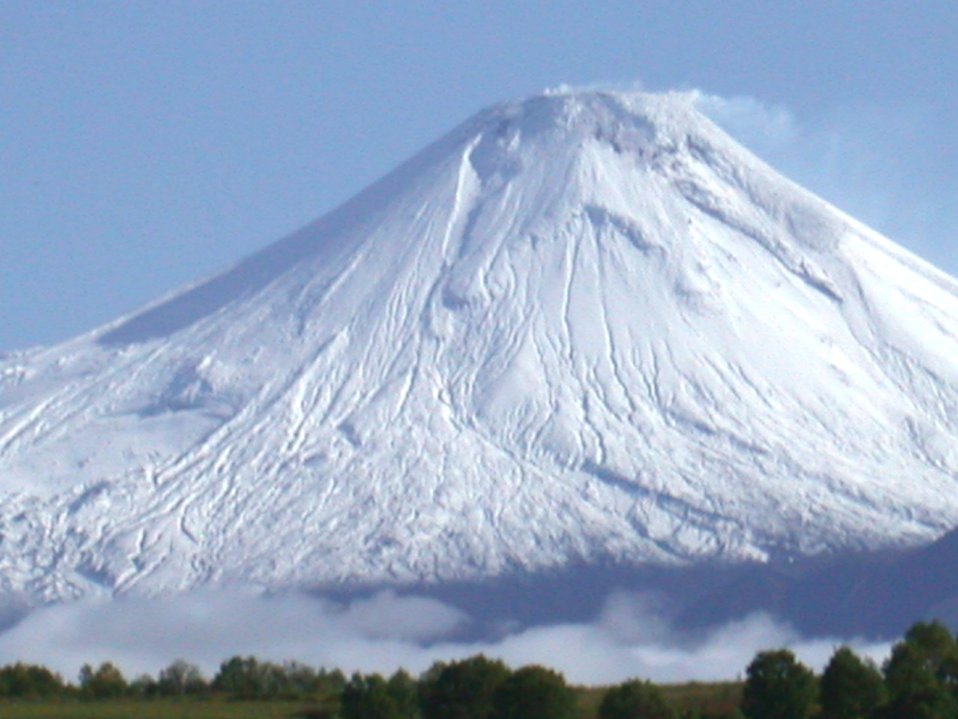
Volcanoes on the Kamchatka Peninsula.